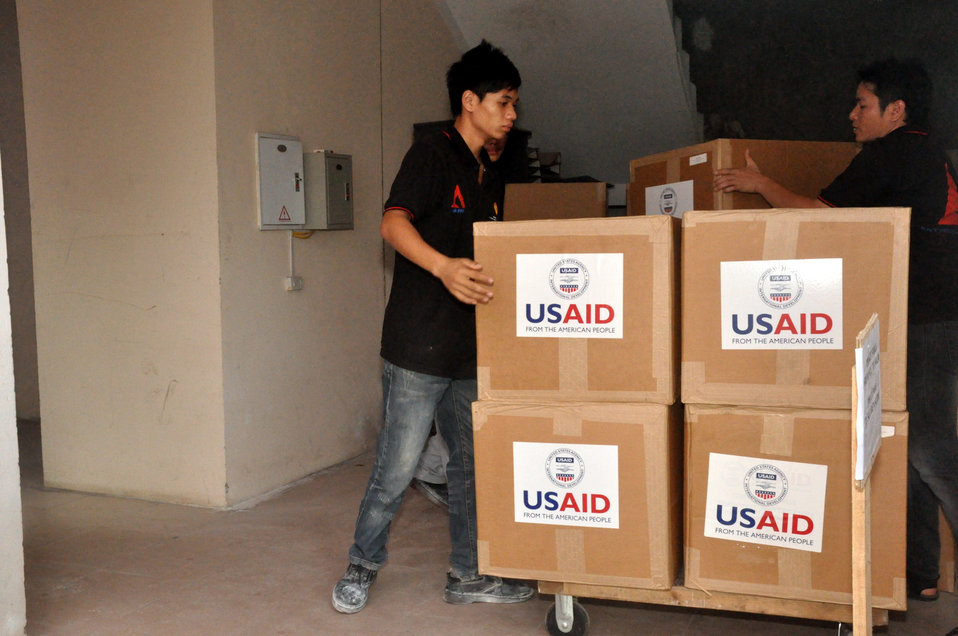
U.S. Provides Protective Gear to Help Prevent Disease Outbreaks